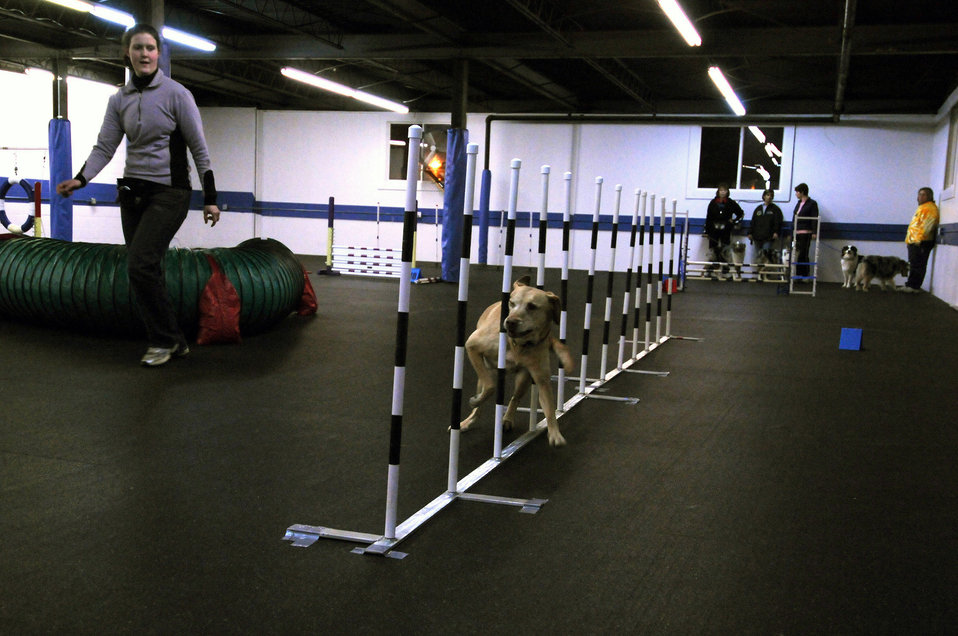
Rags to Riches in the American Heartland

First Lt. Heather Greatting instructs Zoey , her 9-year-old Labrador retriever, to weave through an obstacle Feb. 11 during agillity training. The lieutenant obtained Zoey from a Labrador rescue center and currently competes with her in canine agility. Lieutenant Greatting is a space intelligence surveillance and reconnaissance systems employment analyst with the National Air and Space Intelligence Center at Wright-Patterson Air Force Base, Ohio.